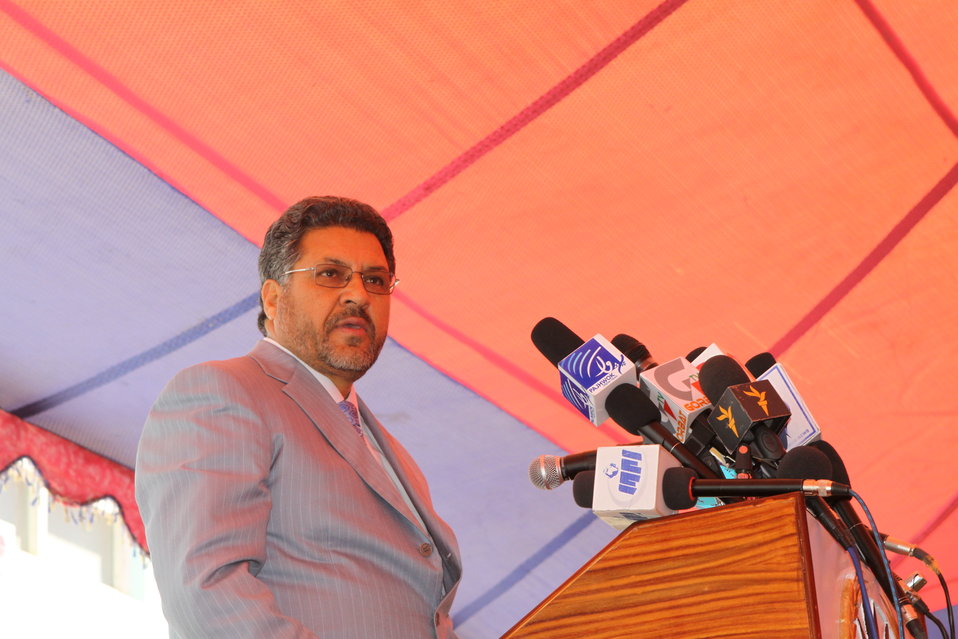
100522 ATVI Graduation 064